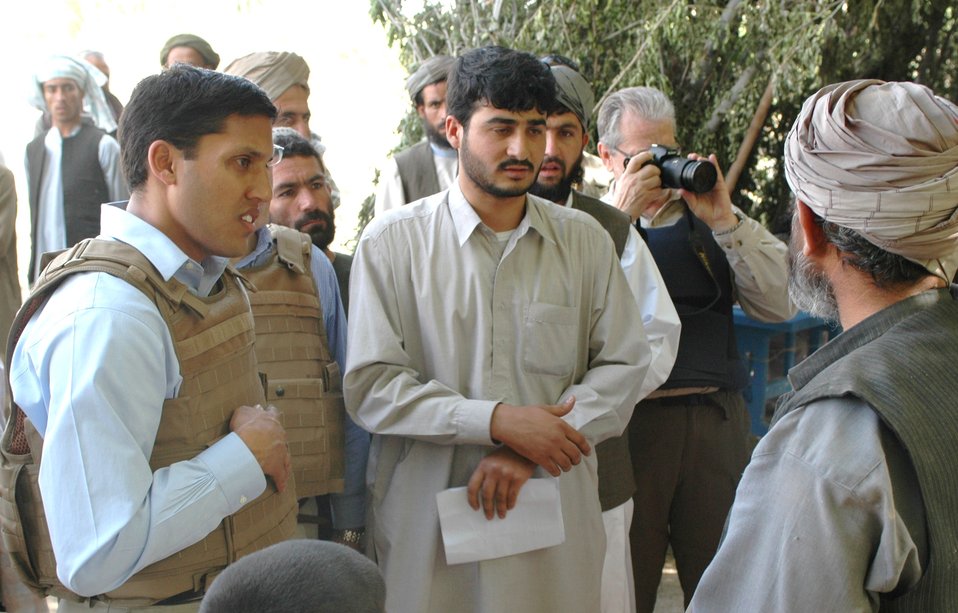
Dr Shah Visits Argandab April 10, 2010